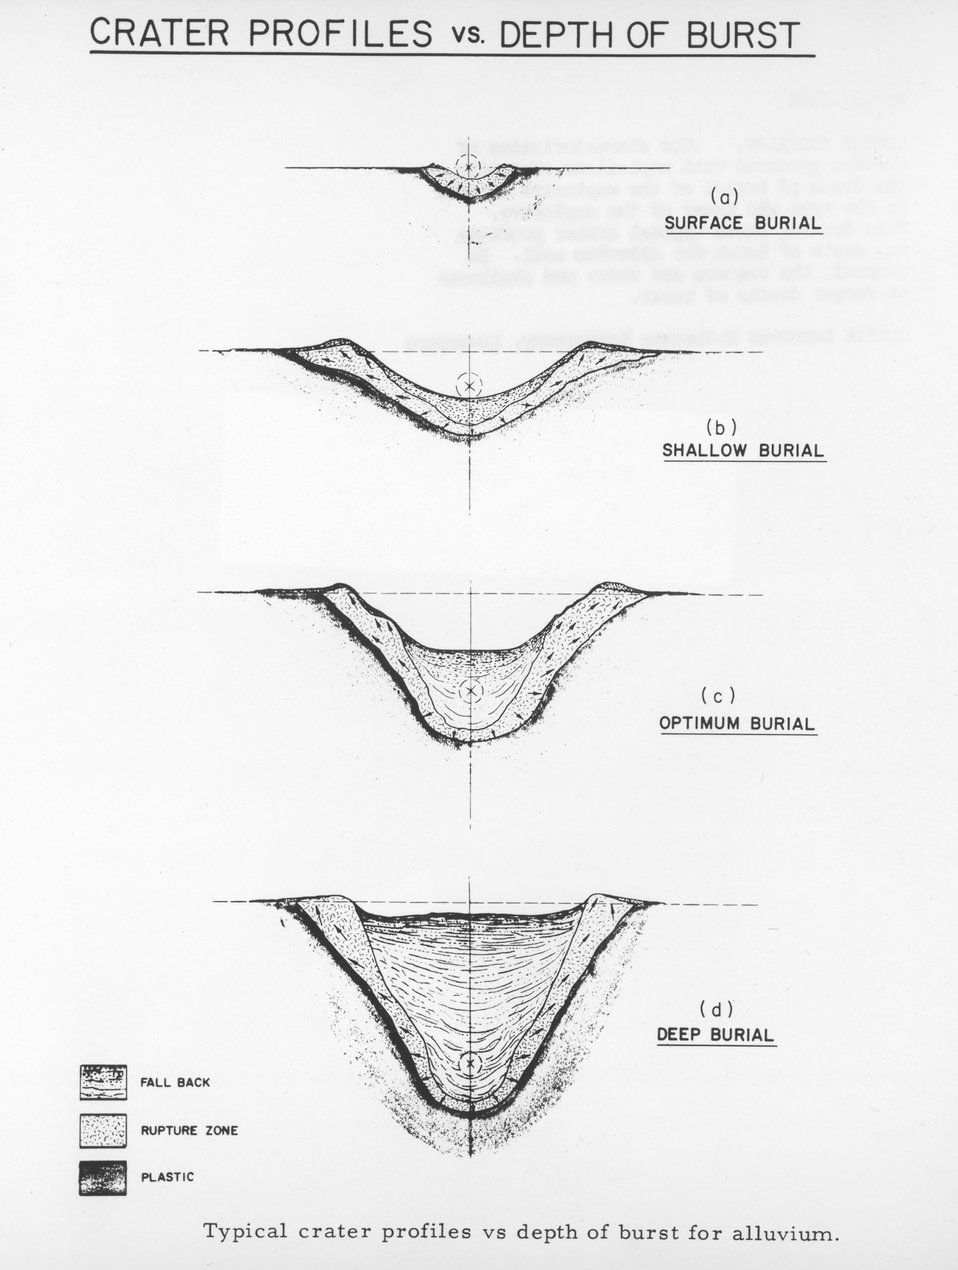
The characteristics of craters produced with explosions vary with the depth of burial of the explosive as well as the type and power of the explosive. c. 1963